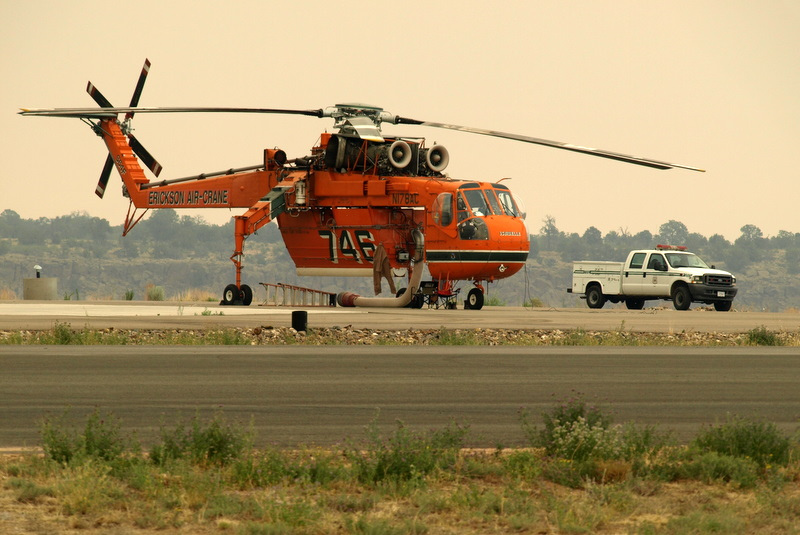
A sky crane at the airport in Los Alamos.

The Las Conchas Fire started on June 26, 2011, it was caused by a fallen tree that caught fire after it came in contact with power lines nearby. The fire had burned over 121,000 acres, including 63 residences. At no time were hazardous materials in danger at Los Alamos National Laboratory. The lab was closed for a week and reopened on July 6th.